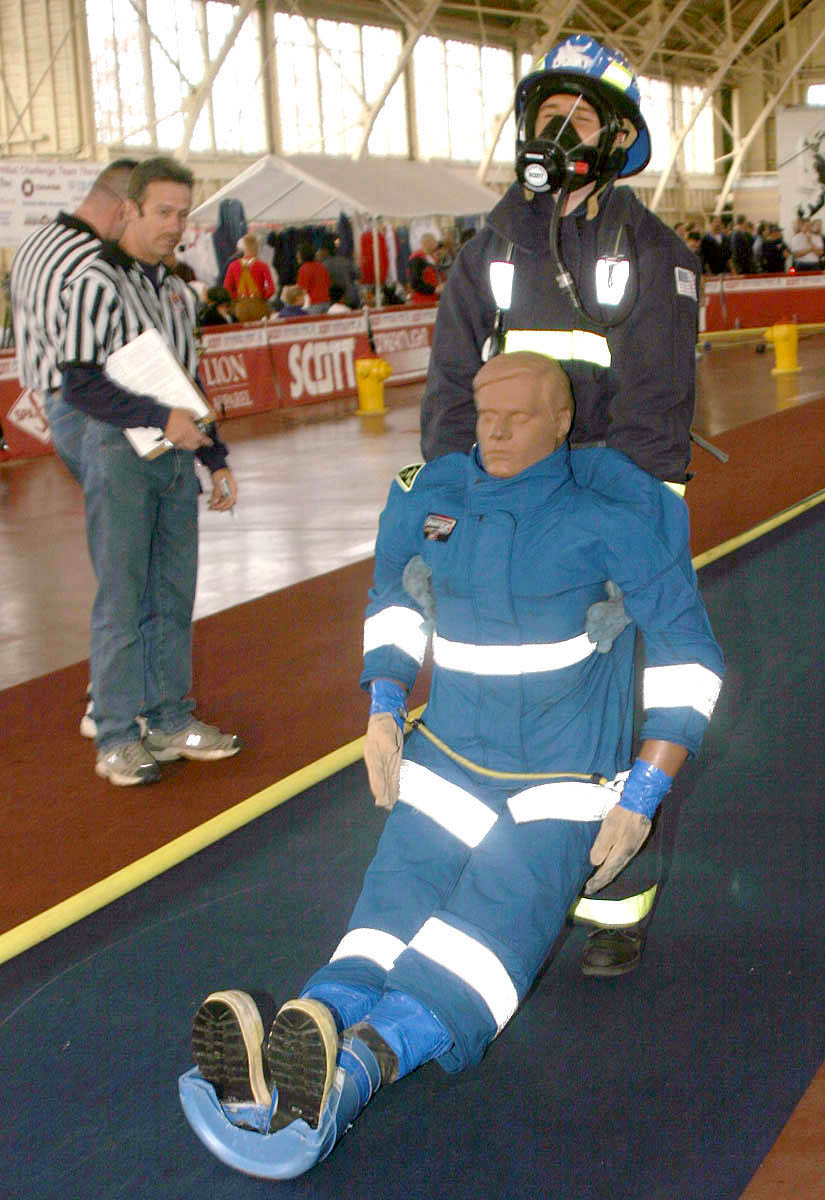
Putting out fires in Ottawa

OTTAWA -- Airman 1st Class Patrick Maples drags a 175-pound mannequin more than 100 feet to the finish line at the end of his individual race during the 12th Annual World Firefighter Combat Challenge here. More than 100 firefighter teams competed in the five-day test of strength, endurance and speed which ended Nov. 8. Shipman is from Little Rock Air Force Base, Ark.